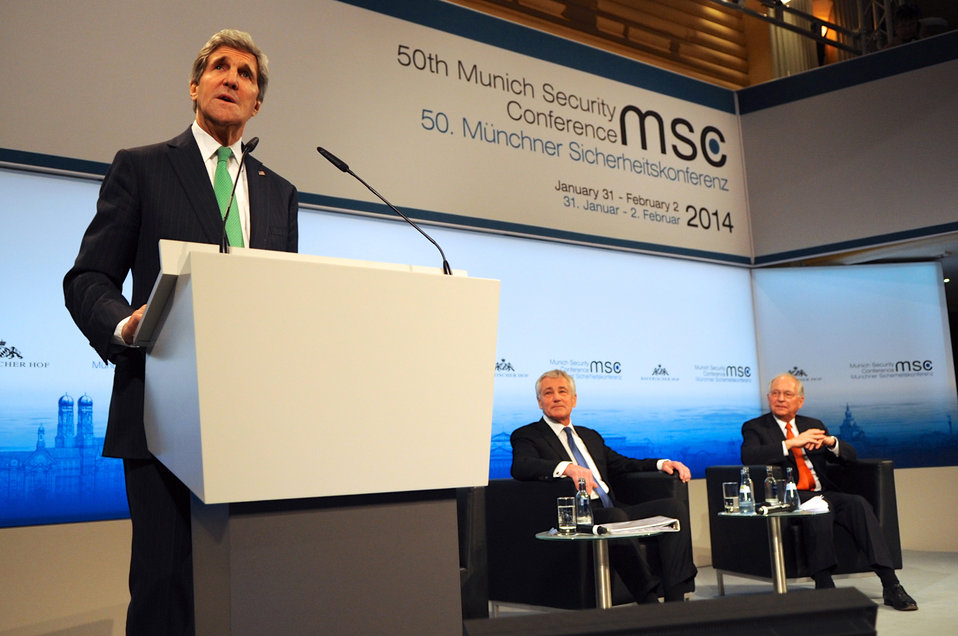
Secretary Kerry Addresses 50th Munich Security Conference

U.S. Secretary of State John Kerry addresses the 50th Munich Security Conference as he and U.S. Secretary of Defense Chuck Hagel make a joint appearance in Munich, Germany, on February 1, 2014.